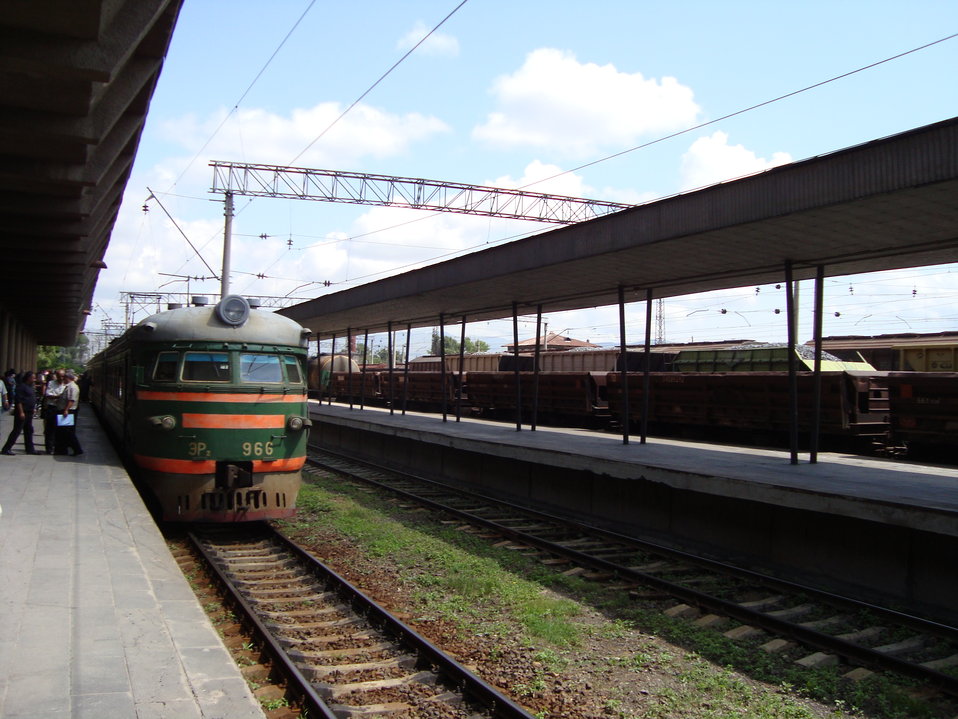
Русский: Railroad station in Gumri, marz (province) Shirak, Republic of Armenia